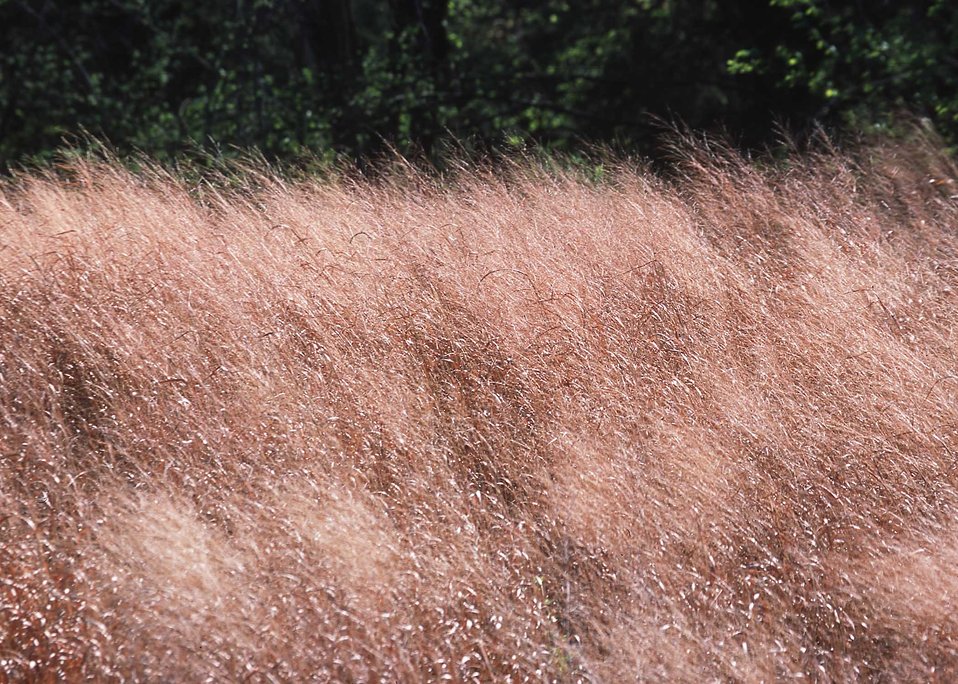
Conservation buffers seeded to Prairie grasses border riparian habitat and a cultivated field. Kansas.